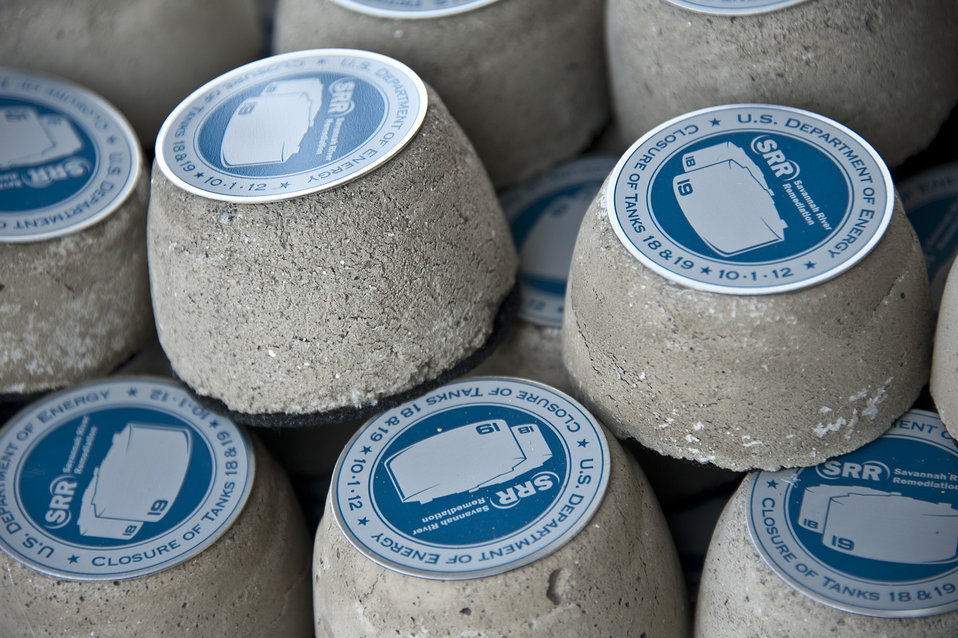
Commemorative paper weights made from the same type of grout that goes into the waste tanks for closure